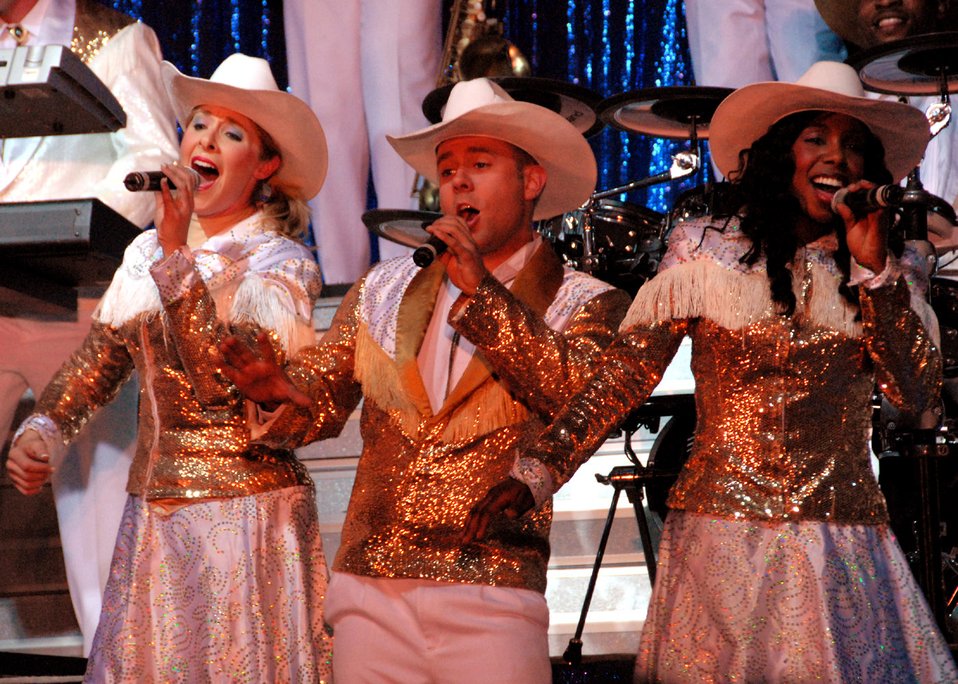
Tops In Blue performs at Osan

Tech. Sgt Jennifer Dack, (from left) Senior Airman Nicholas Amari and Senior Airman Chonte Walker perform during their annual world tour celebrating